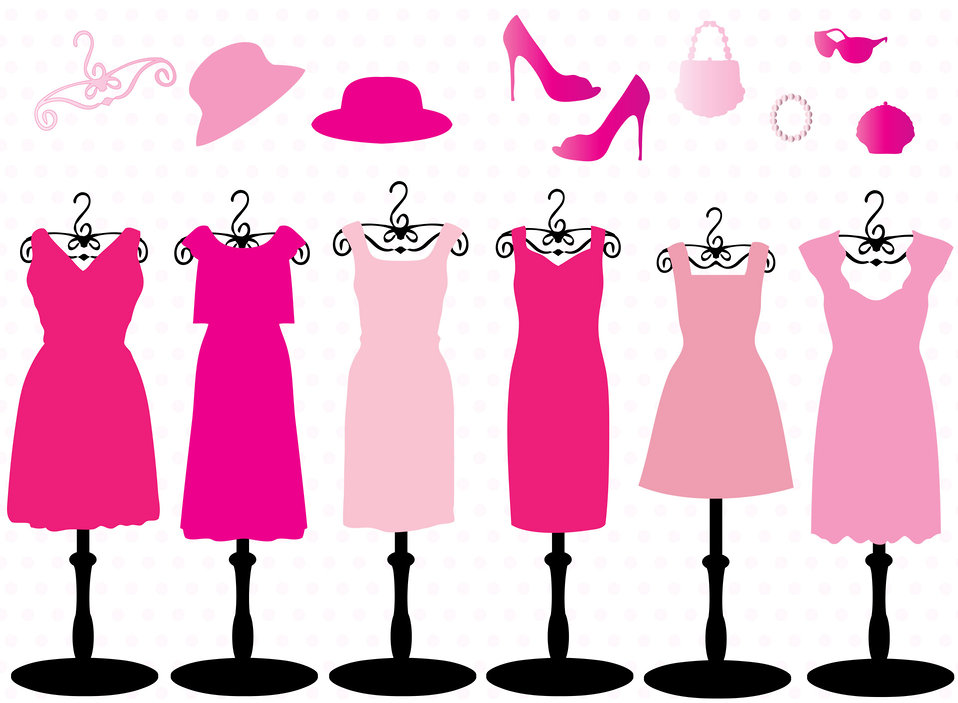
Pink dresses & accessories

Pretty pink dresses, hats, shoes, illustration,.